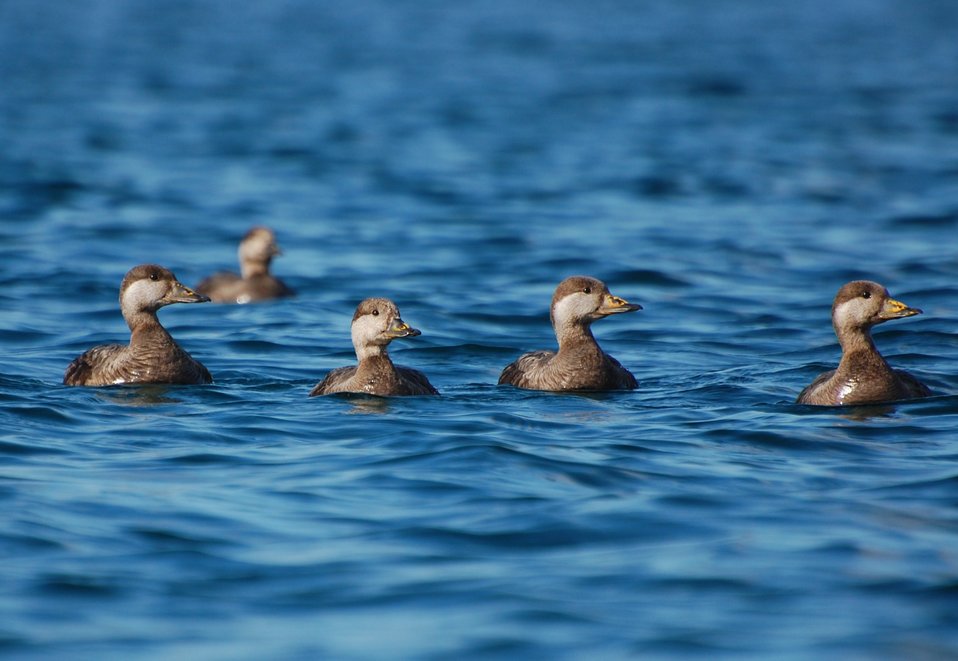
Black Scoter, Izembek National Wildlife Refuge